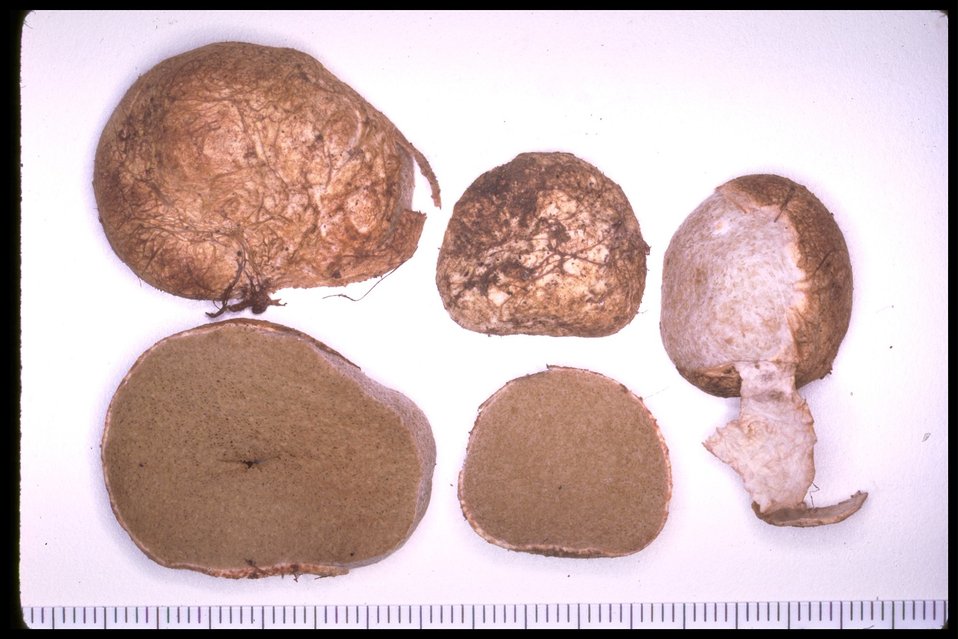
Medium shot of rhizopogon (Rhizopogon flavofibrillosus).